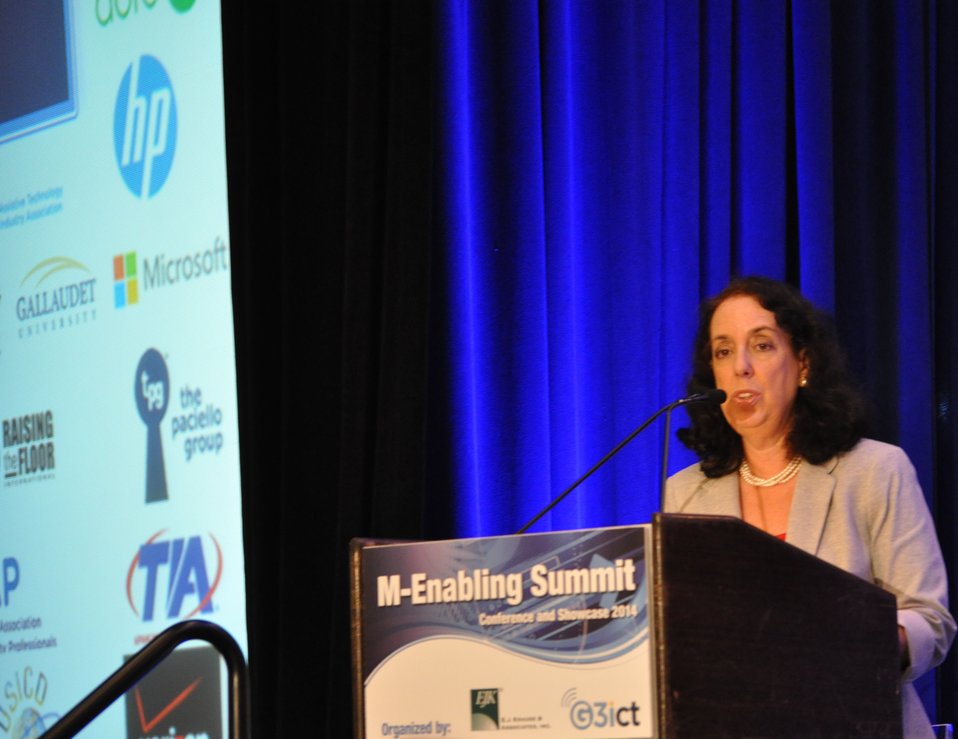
6.9.2014 Third Annual Chairman’s Awards for Advancement in Accessibility

Remarks from Karen Peltz Strauss, Deputy Bureau Chief, Consumer and Governmental Affairs Bureau, FCC